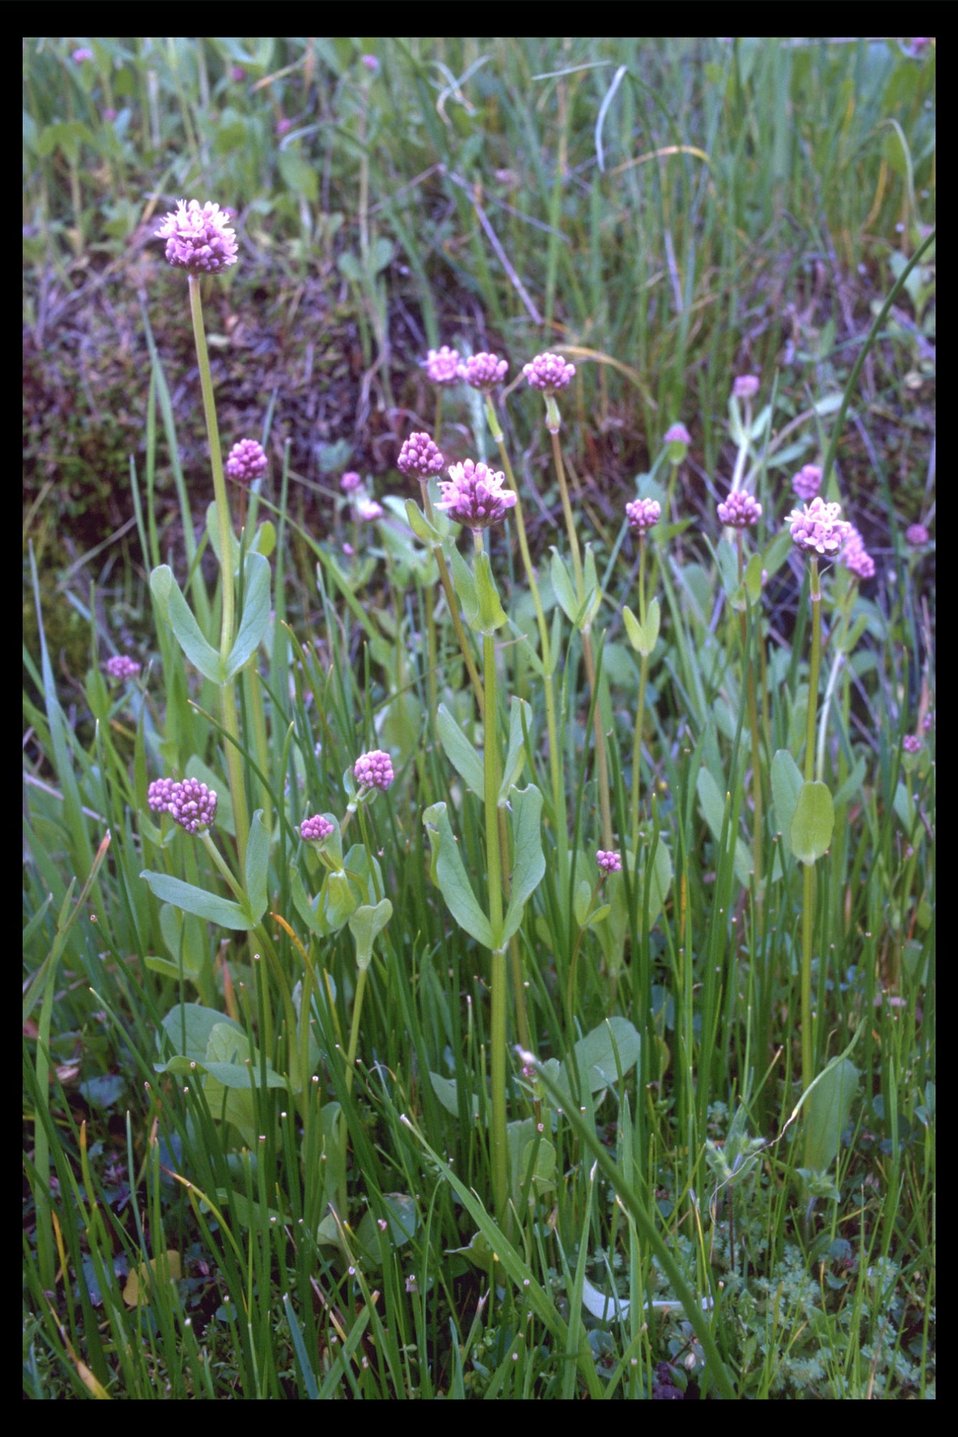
Rosey Plectritis or Sea Blush (Plectritis congesta) near Shady Cove.